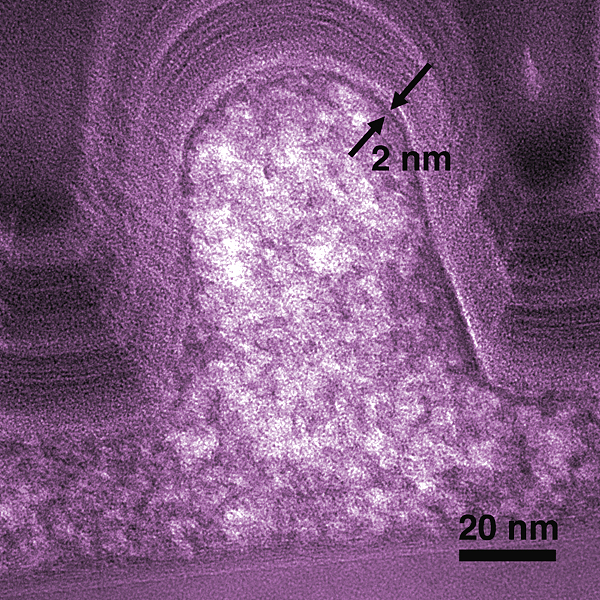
Nanoimprint Lithography Tests

Electron micrograph shows a cross-section of a typical SOG microcircuit feature. Nanoporous regions in the interior are lighter. The process forms a dense, stronger skin about 2 nanometers thick on the outside. (Color added for clarity.)